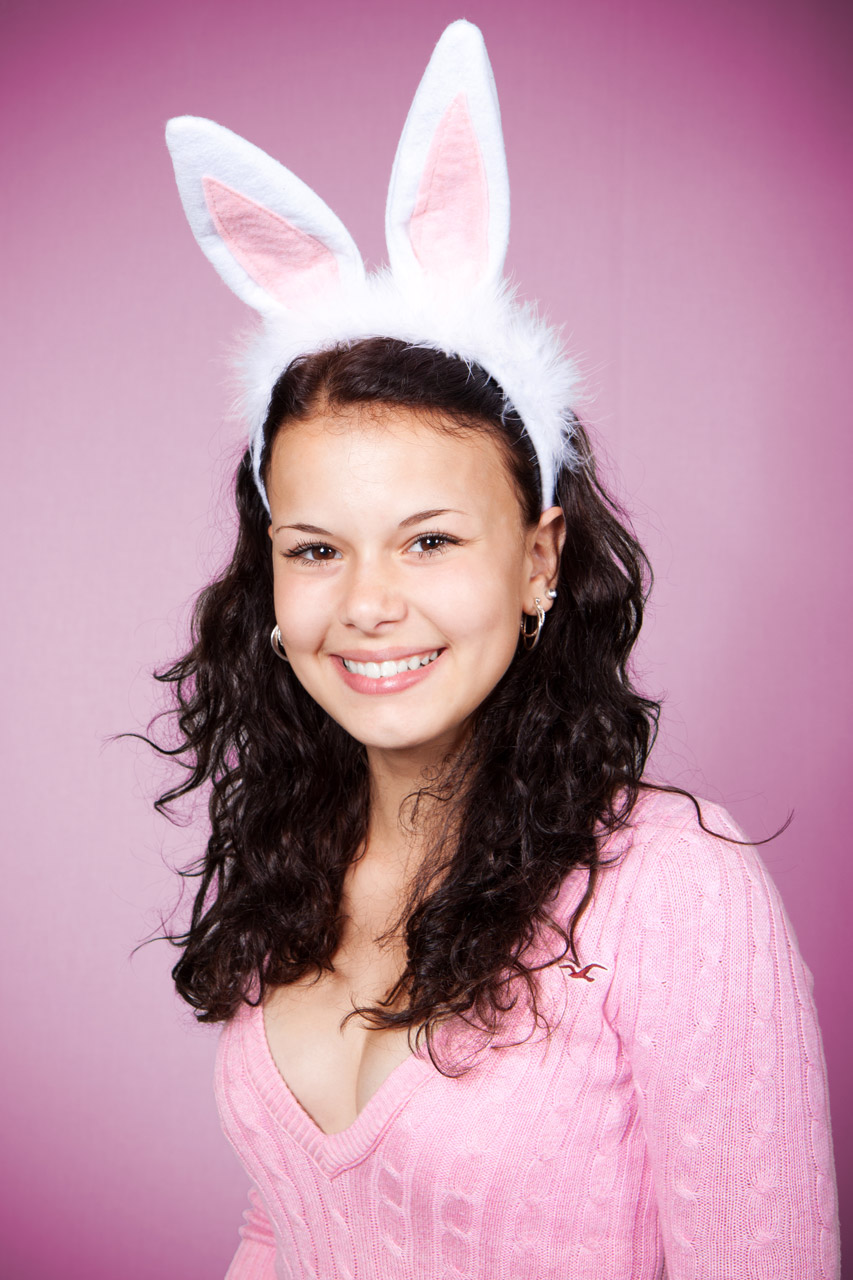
Easter bunny girl

Young woman wearing pink easter bunny costume.